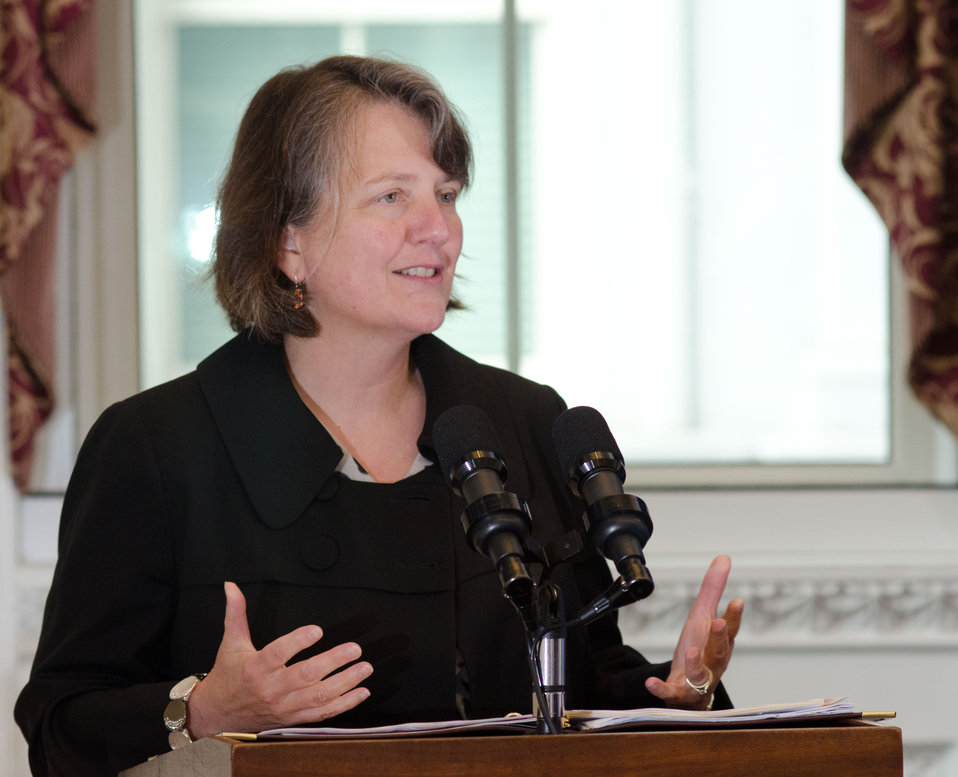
Agriculture Deputy Secretary Kathleen Merrigan was the keynote speaker honoring the eleven individuals recognized for their efforts to reduce hunger and increase food security in the U.S. and internationally, at the White House Champions of Change Strengthening Food Security at Home and Abroad Event held at the White House, in Washington, D.C. on Thursday, Sept. 6, 2012.